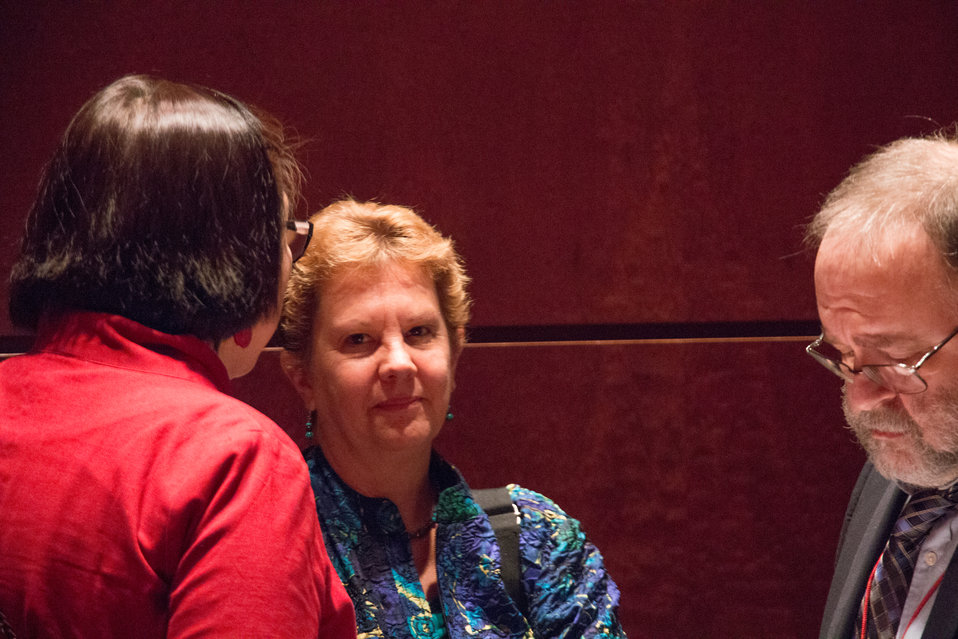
VHAP Launch (394 of 511)